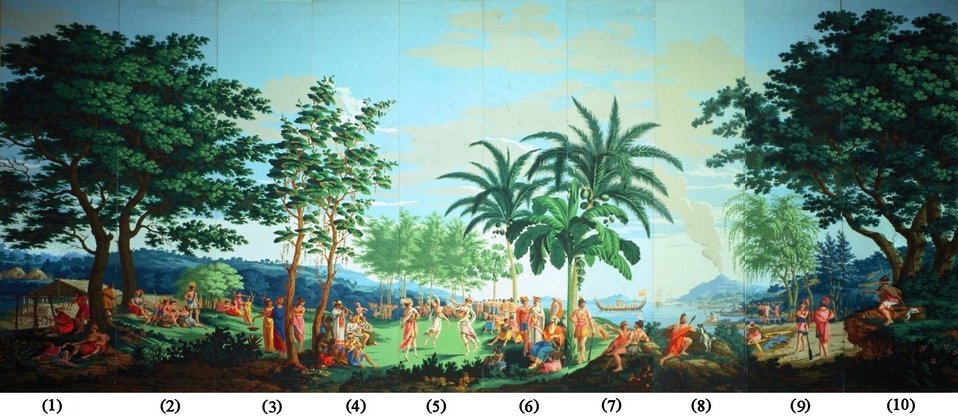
'Sauvages de la Mer Pacifique', panels 1-10 of woodblock printed wallpaper designed by Jean-Gabriel Charvet and manufactured by Joseph Dufour et Cie Panel 1: Inhabitants of Nootka Island in Canada, which was visited by Cook in March 1778. Panel 2: Inhabitants of Raiatea, the second largest of the Society Islands in French Polynesia, Chief Oreo met Captain Cook in 1777. Panel 3: Inhabitants of Ha'apai in Tonga. A man, a woman and a girl behind plum trees taking part in feast of the Arroey (seen in panel-2). Panels 4-6: Inhabitants of Tahiti, the largest island in French Polynesia. O-too, King of Tahiti, in panel 6, on a throne beneath a banana tree between two coconut trees, with his daughter and sister in 1773. The scene is a heava, a kind of dramatic dance accompanied by flutes, drums and a chorus of singing and clapping girls. Panel 7: Inhabitants of Tanna (New Hebrides, Vanuatu) visited by Cook in July 1774. There are three islanders in foreground. The double war canoe in the background was launched during Cook’s stay in Pare, Tahiti. Panels 8-9: Inhabitants of the Sandwich Islands (Hawaii) visited by Cook for the third time in January 1779. Chief Kaneena is in the foreground of panel 9 and behind him, another chief watch Cook’s death. Cook’s two ships, HMS Resolution and the smaller HMS Discovery, are anchored off shore. The volcano in the background resembles Mount Yasur on the island of Tanna in New Hebrides, and is unlike any in Hawaii. Panels 10-11: Inhabitants of New Zealand, discovered by Abel Tasman. In panel 10 Chief Kaoora, who killed a detachment of Captain Furneaux’s crew, sits on a rock under two gris-gris trees. In panel 11 a New Zealand woman and child with warriors on a trail to the rear.